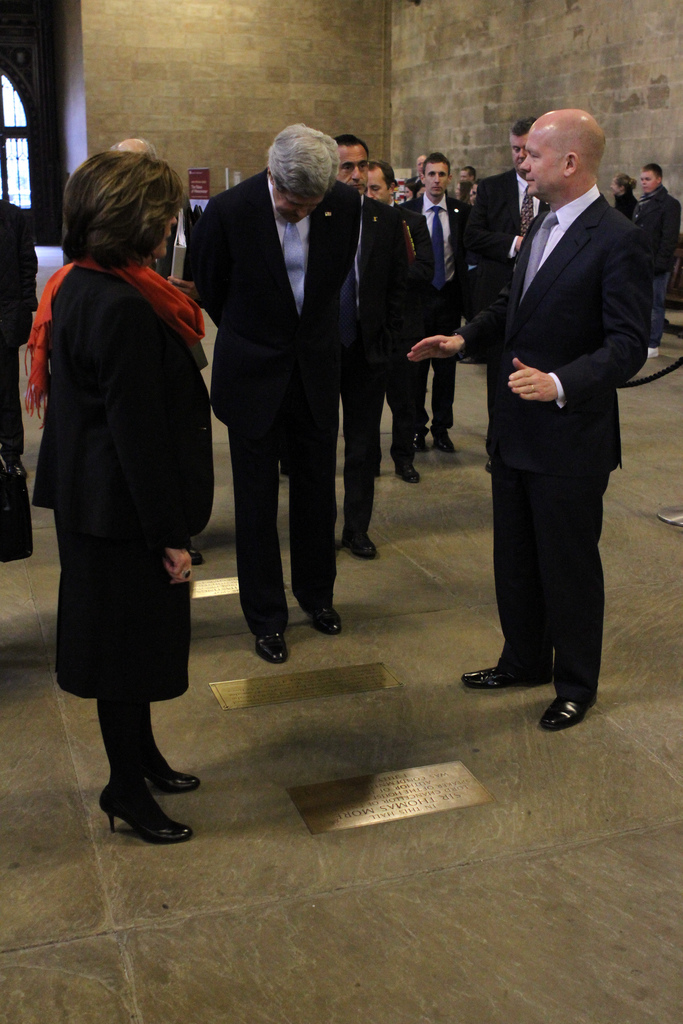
Baroness D'Souza, Secretary Kerry, and Foreign Secretary Hague Look at Westminster Hall

From left to right, House of Lords Speaker Baroness D'Souza, U.S. Secretary of State John Kerry, and UK Foreign Secretary William Hague look at the plaque commemorating Sir Thomas More's trial at Westminster Hall in London, United Kingdom, February 25, 2013.